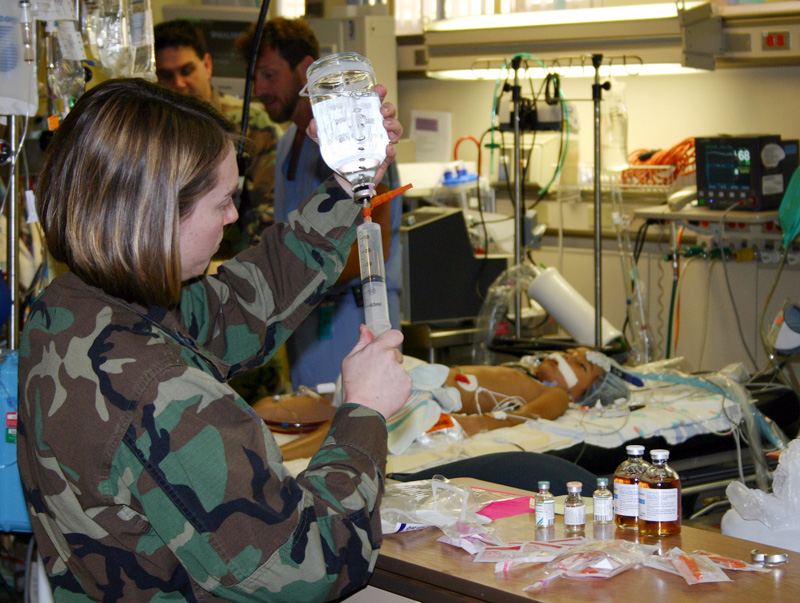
Medical team journeys across Pacific

HONOLULU (AFPN) -- Capt. Jeannette Gonzalez prepares additives for the blood used in the mobile extracorporeal membrane oxygenation, or ECMO, machine. The levels of calcium, sodium and other chemicals must duplicate the blood Meaghan Ababa is currently receiving to minimize negative reactions during transfer to the Children's Hospital in Los Angeles.